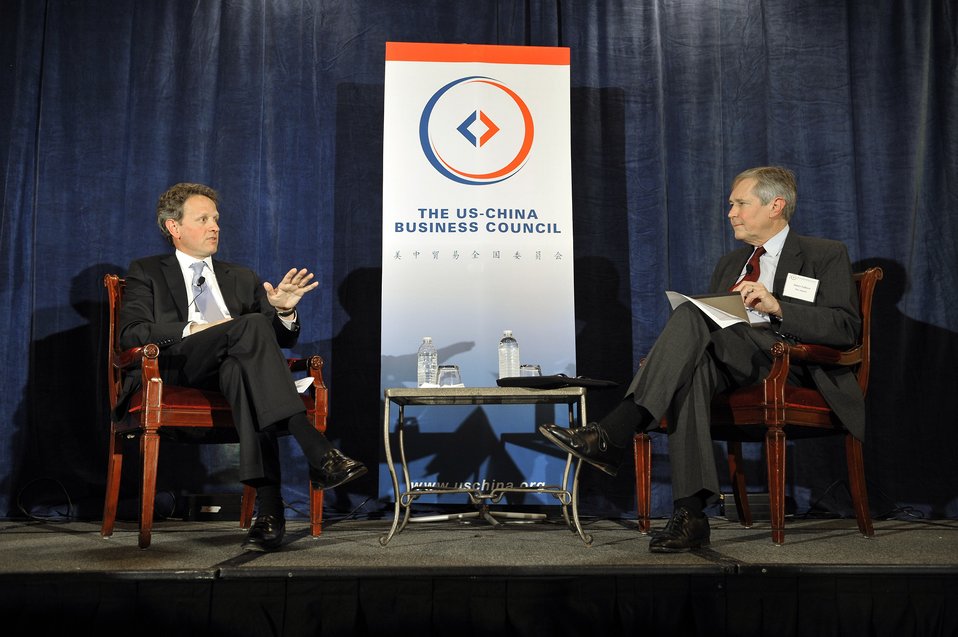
U.S.-China Business Council

On May 3, 2011, Treasury Secretary Tim Geithner participated in a discussion on the upcoming U.S.-China Strategic & Economic Dialogue (S&ED) moderated by The Atlantic’s James Fallows at an event hosted by the U.S.-China Business Council.